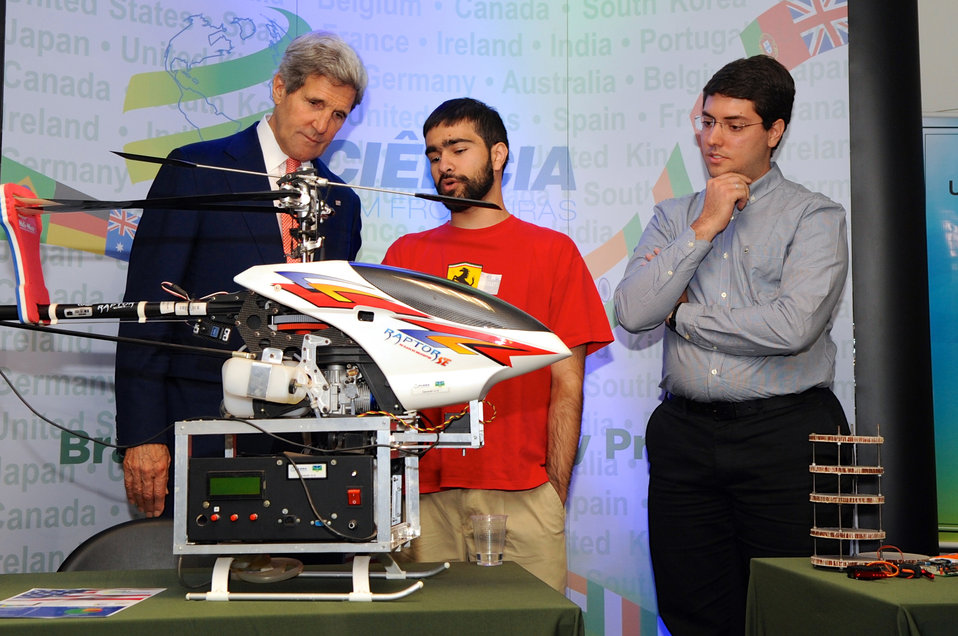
Secretary Kerry Views a Brazilian Science Exhibition

U.S. Secretary of State John Kerry listens as students Matheus Teixeira and Pedro Nehme explain an exhibit during a visit to a science exhibition in Brasilia, Brazil, on August 13, 2013.